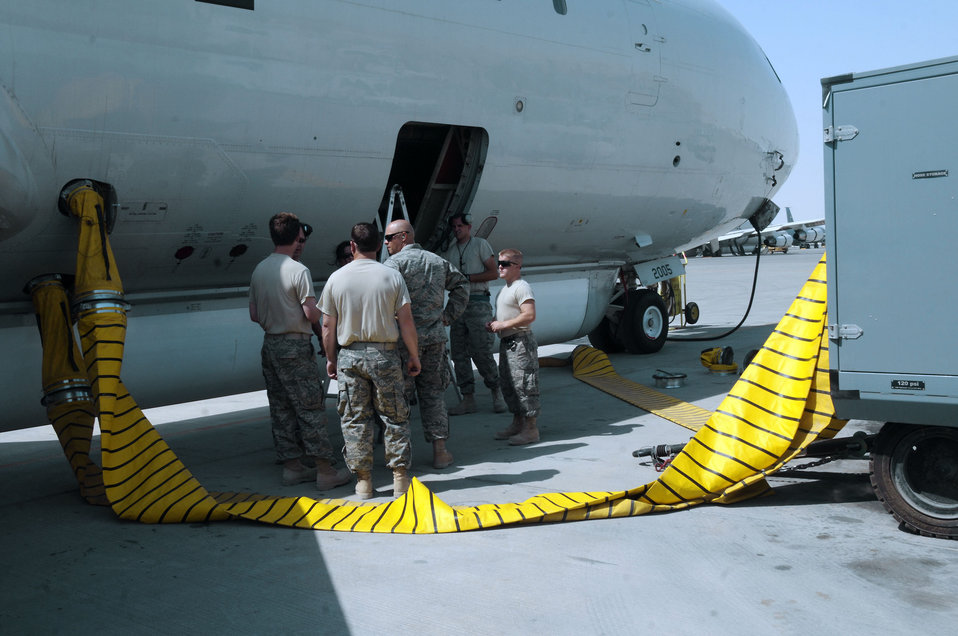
Robins officials help fix vital warfighters' equipment issue

Members of the 642nd Combat Sustainment Group at Robins Air Force Base, Ga., are involved with developing specifications for a redesign of flightline air conditioners that are critical to the operation of aircraft in high temperatures for warfighters in Southwest Asia.